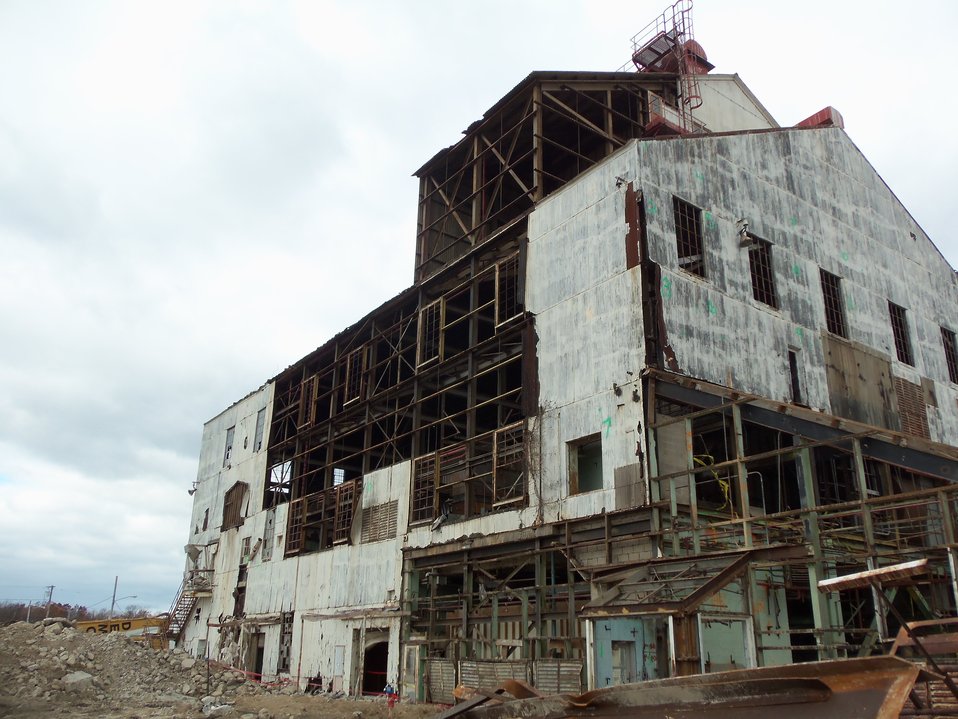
NFSS Building 401 mid-deconstruction.
Activities from the Niagara Falls Storage Site, which is associated with the former Lake Ontario Ordnance Works. Formerly Utilized Sites Remedial Action Program (FUSRAP), a program initiated in 1974 to identify, investigate and clean up or control sites that were part of the Nation's early atomic energy and weapons program. Activities at the sites that are eligible for FUSRAP were conducted by Manhattan Engineer District (MED) or the Atomic Energy Commission (AEC), both predecessors of the Department of Energy (DOE). The U.S. Army Corps of Engineers was assigned management of FUSRAP by Congress in 1997.